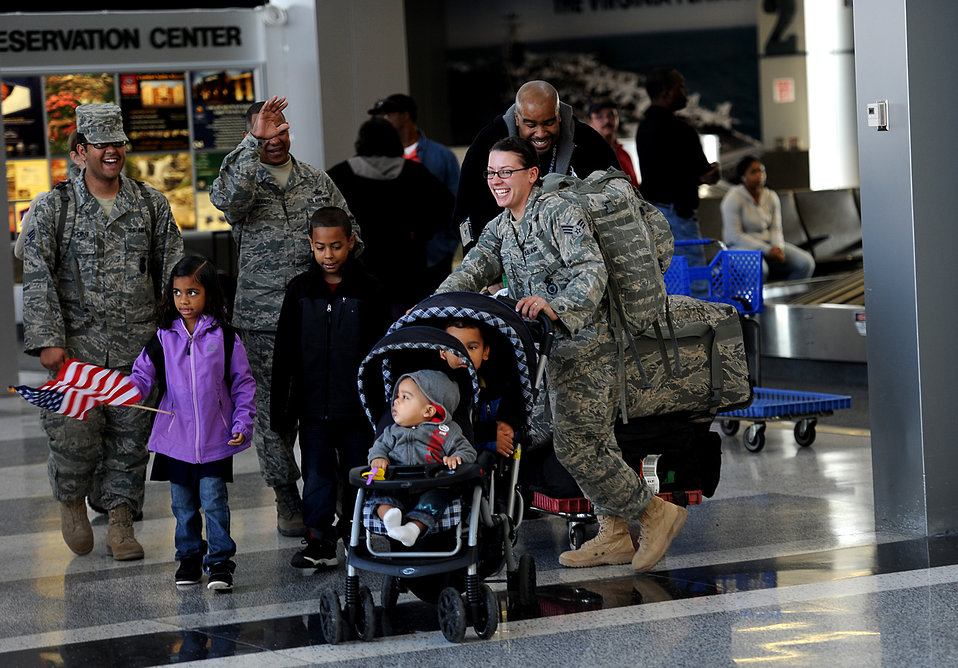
Langley SFS welcomes home deployed defenders

Senior Airmen Kristian Robles Cruz and Amber Boyd from the 633rd Security Forces Squadron, which is at Joint Base Langley-Eustis, Va., are greeted at the Newport News, Va., airport by family and coworkers Nov. 2, 2011 . The two were part of a group of Airmen that deployed to Joint Base Balad, Iraq, in June, but returned a couple of months early after President Obama announced the withdrawal of all U.S. troops from Iraq by the end of the year.